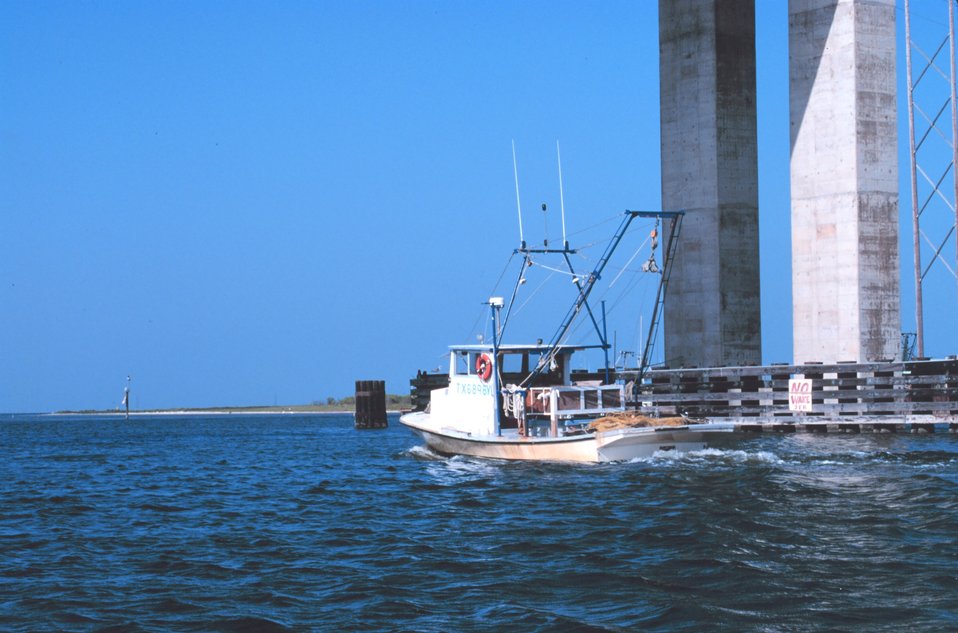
A shrimp boat headed north along the Intracoastal Waterway passing under the JFK Causeway